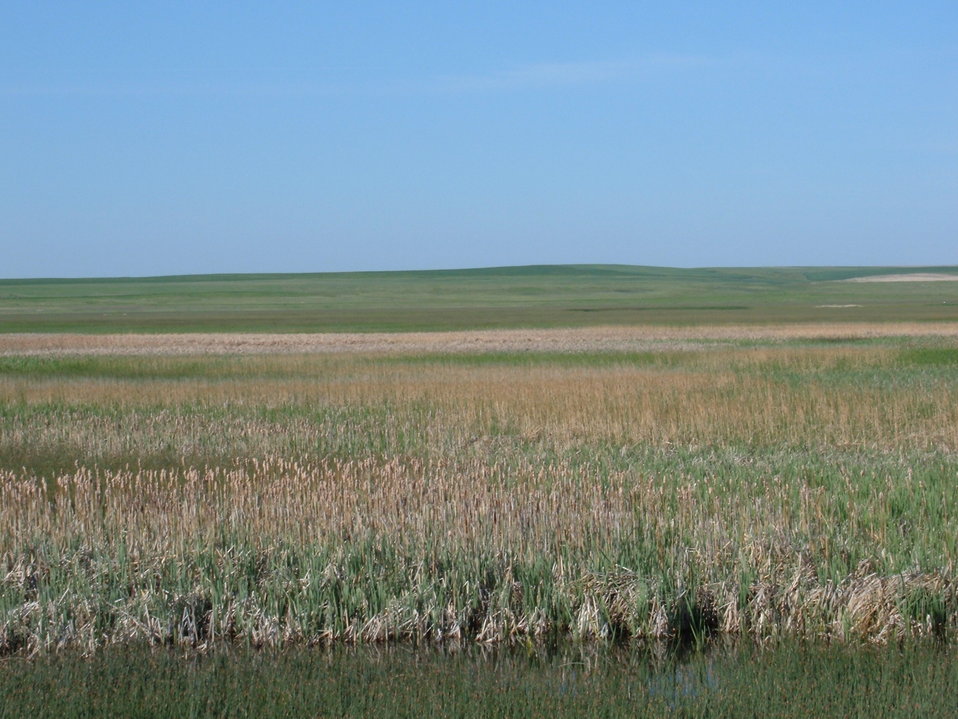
Cattails in the Marsh

Benton Lake NWR is one of more than 520 national wildlife refuges administered by the U.S. Fish and Wildlife Service that were established to protect, enhance, and restore the Nation's wildlife heritage. Covering 12,383 acres (19 square miles), the Refuge is located on the western edge of the northern Great Plains, 50 miles east of the Rocky Mountains and 12 miles north of Great Falls, Montana. Despite its name, Benton Lake is actually a 5,000-acre shallow wetland created by the last continental glacier thousands of years ago.